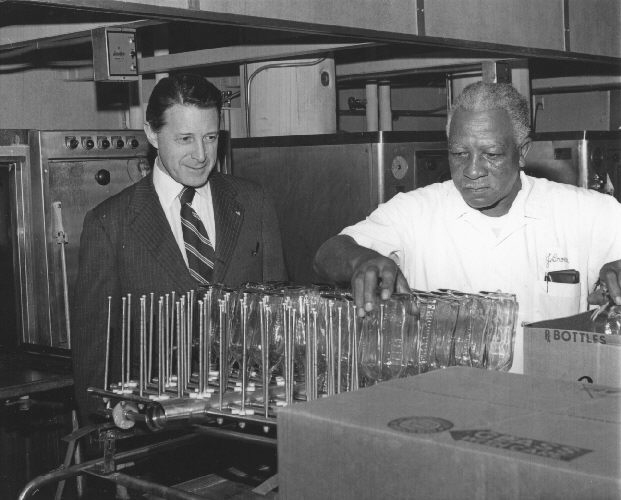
DHEW Secretary, Caspar Weinberger visits CDC.